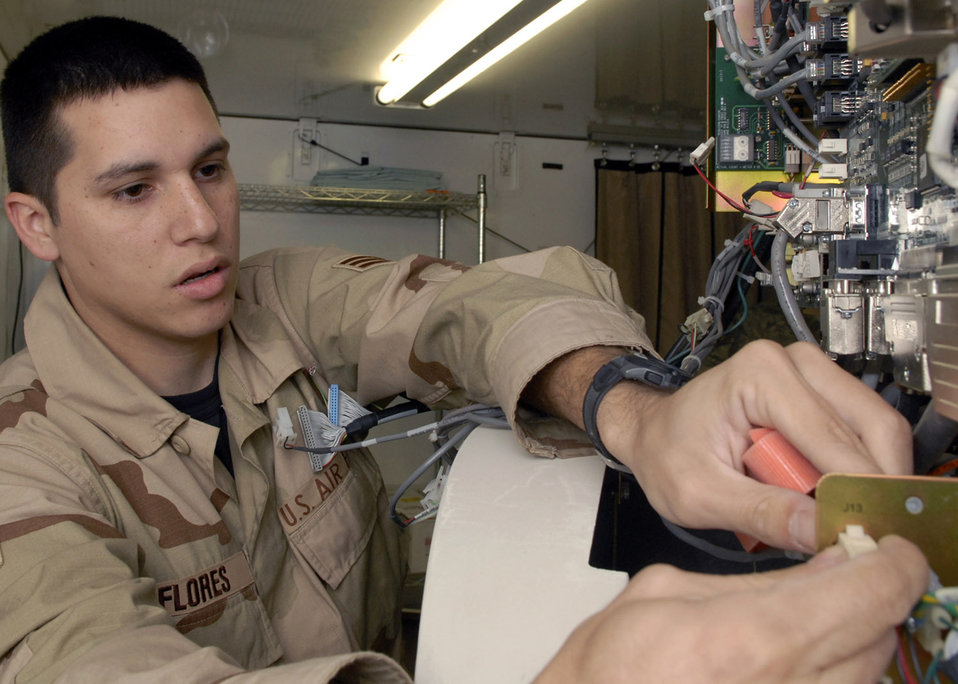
Supporting warrior care

Senior Airman Bobby Flores performs preventive maintenance on a CAT scan machine Oct. 18 at the Air Force Theater Hospital at Balad Air Base, Iraq. The hospital has two CAT scans, which are vital to the diagnostic process. Airman Flores is currently deployed from Lackland Air Force Base, Texas, to the 332nd Expeditionary Medical Support Squadron.